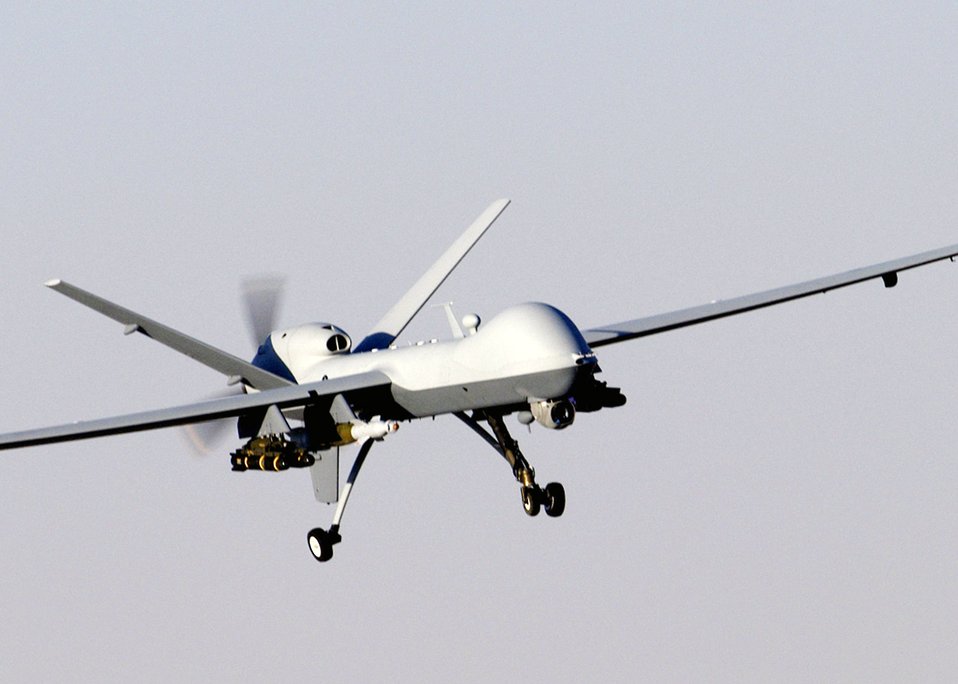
Dec. 17 airpower summary: Reapers touch enemy forces

A MQ-9 Reaper unmanned aerial vehicle prepares to land after a mission in support of Operation Enduring Freedom in Afghanistan. The Reaper has the ability to carry both precision-guided bombs and air-to-ground missiles.